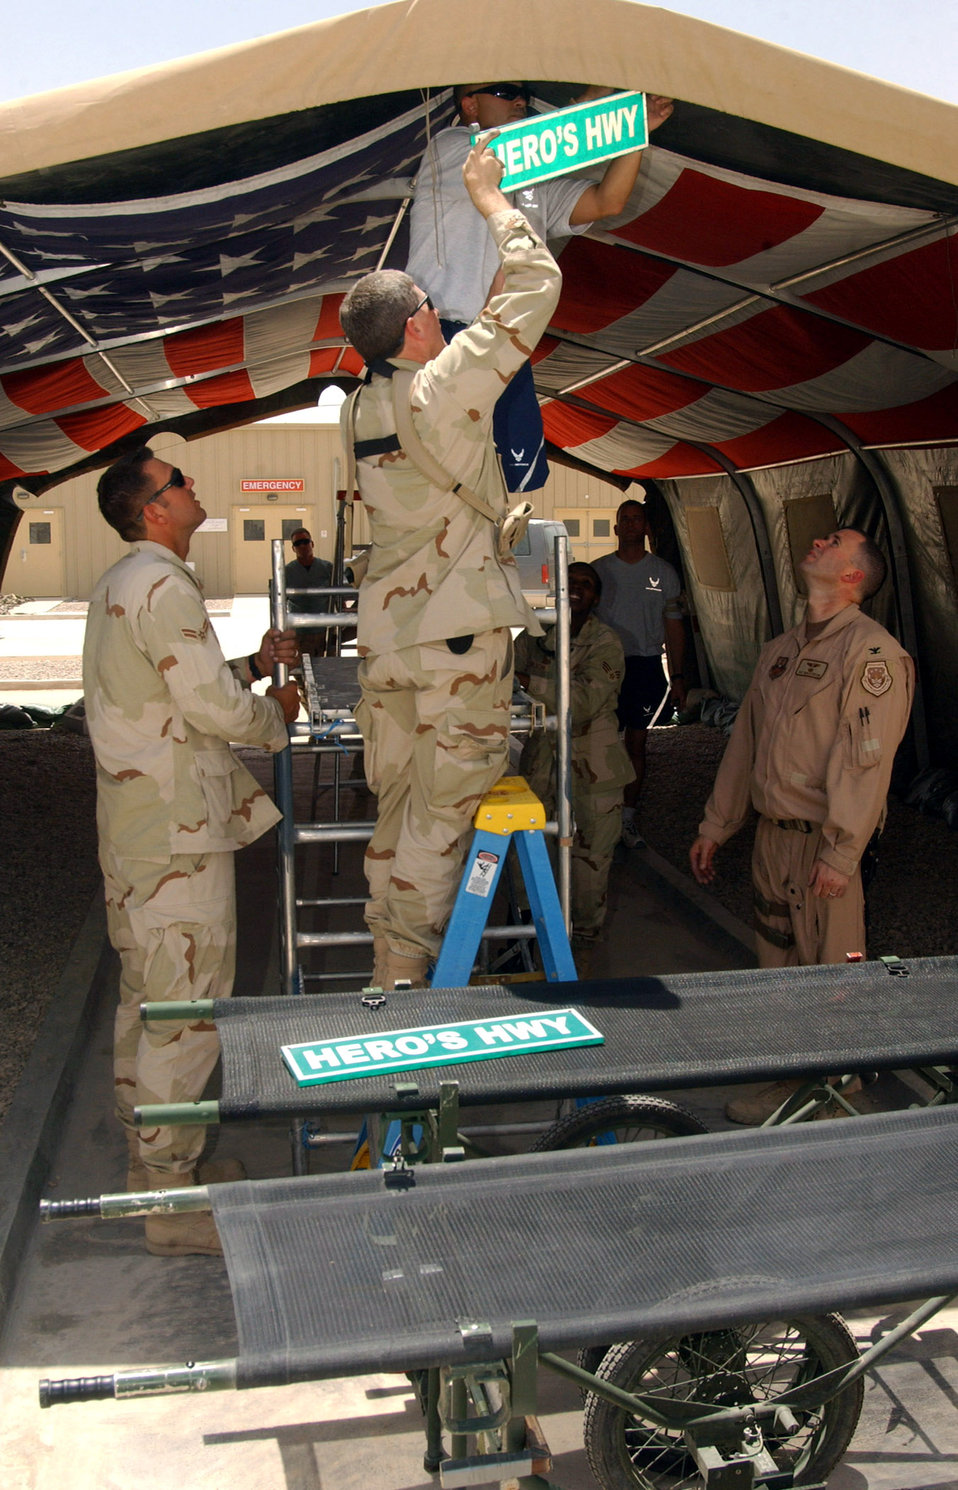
Hero's Highway

Airmen and volunteers from the 332nd Expeditionary Medical Group put up the American flag that hangs in the Air Force Theater Hospital's Hero's Highway at Balad Air Base, Iraq. The Hero's Highway was moved from the tent hospital to the new facility July 21. Wounded servicemembers travel under this flag as they make their way from the helicopter pad to the hospital. The new facility, which opens Aug. 3, will have about 97,000 square feet featuring 20 intensive care units, 40 beds and up to eight operating tables.